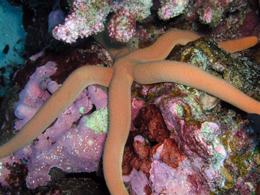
Linkia sea star - Jarvis Island NWR